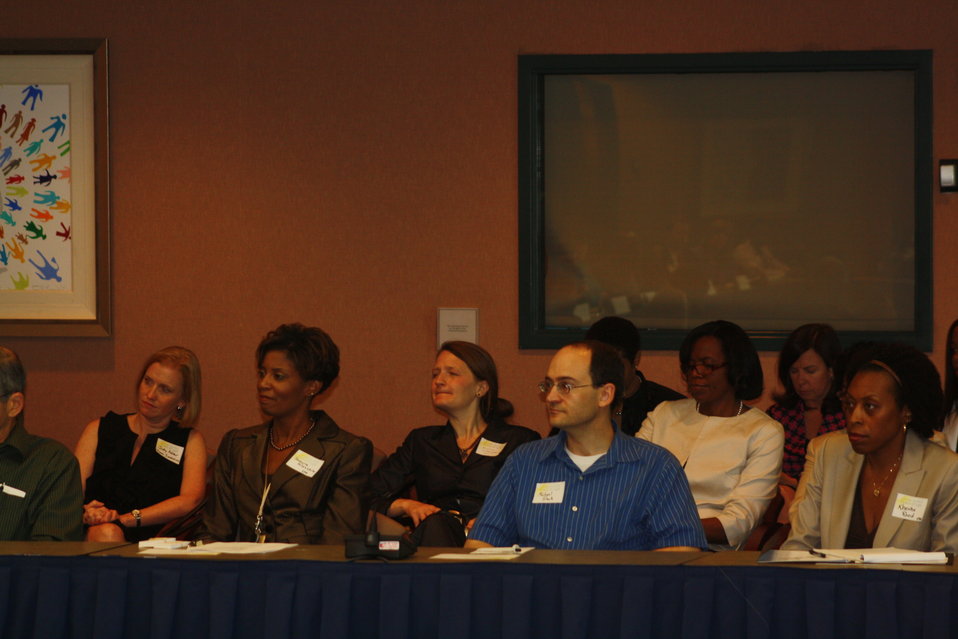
Faith-Based and Neighborhood Partnership launch at Atlanta's Carter Center